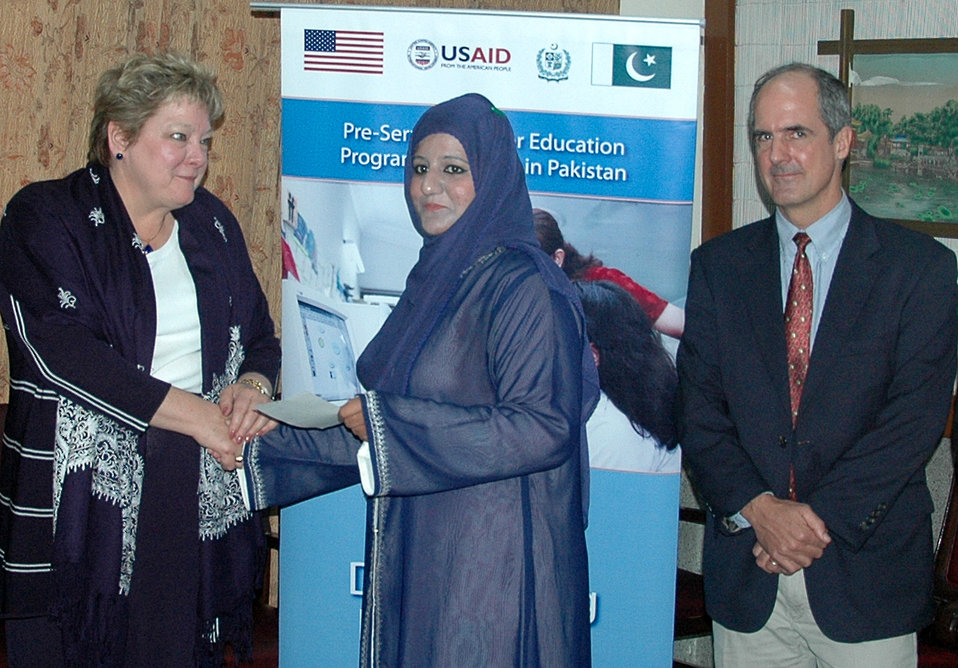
Pre-Service Teachers Education Program (Pre-STEP)

Lahore, February 21, 2012 - Deputy Mission Director USAID Ms. Karen Freeman distributing scholarships to B. Ed (Hons.) students at IER, University of the Punjab. Mr. Ted Gehr, Provincial Director USAID/Punjab is also present at the occasion.